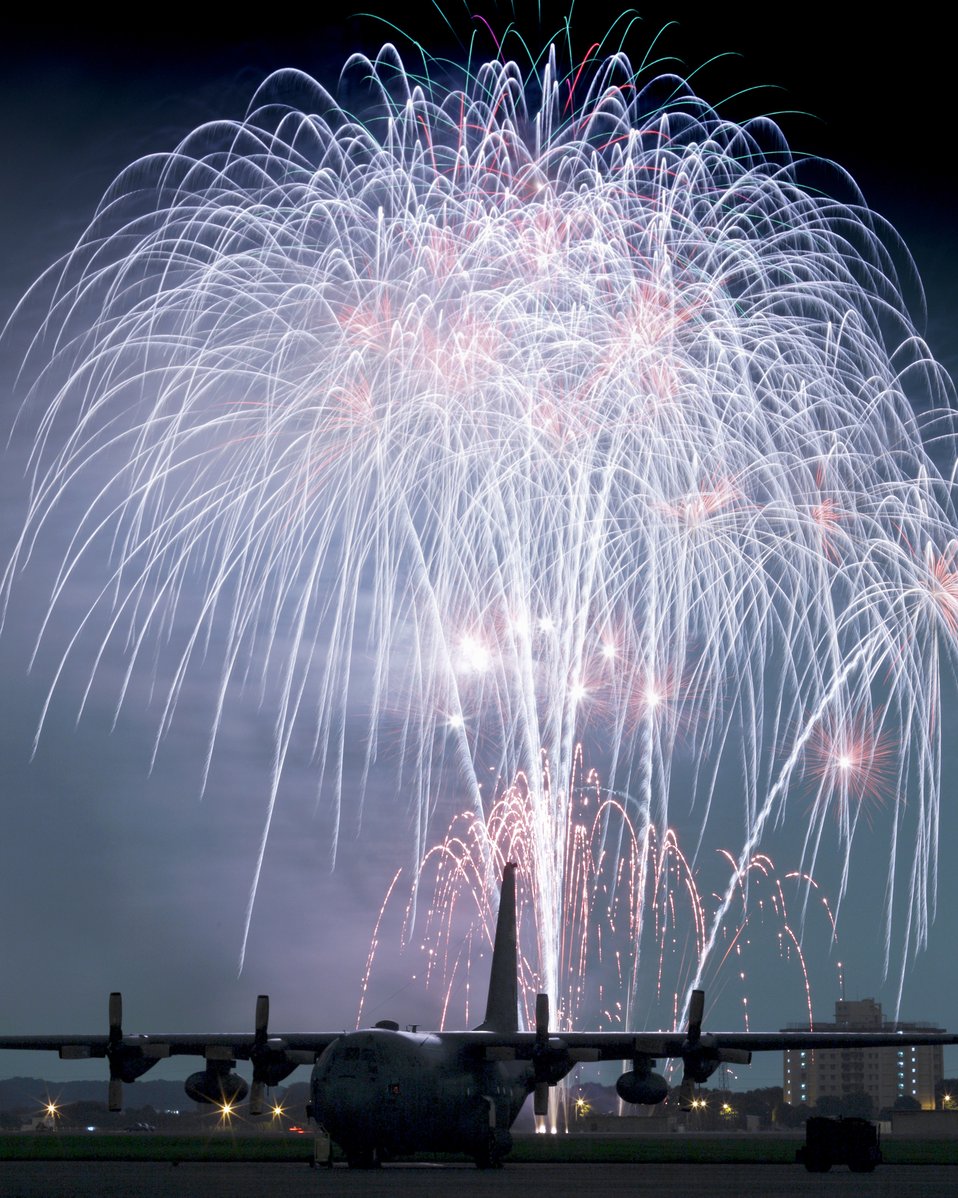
Fireworks Celebration

Fireworks burst over Yokota Air Base, Japan, July 3, 2010. Members of the 374th Force Support Squadron started the day with the Firecracker 5K run and continued with a wide variety of activities throughout the day including go-carts, a petting zoo, live entertainment, food and fireworks.